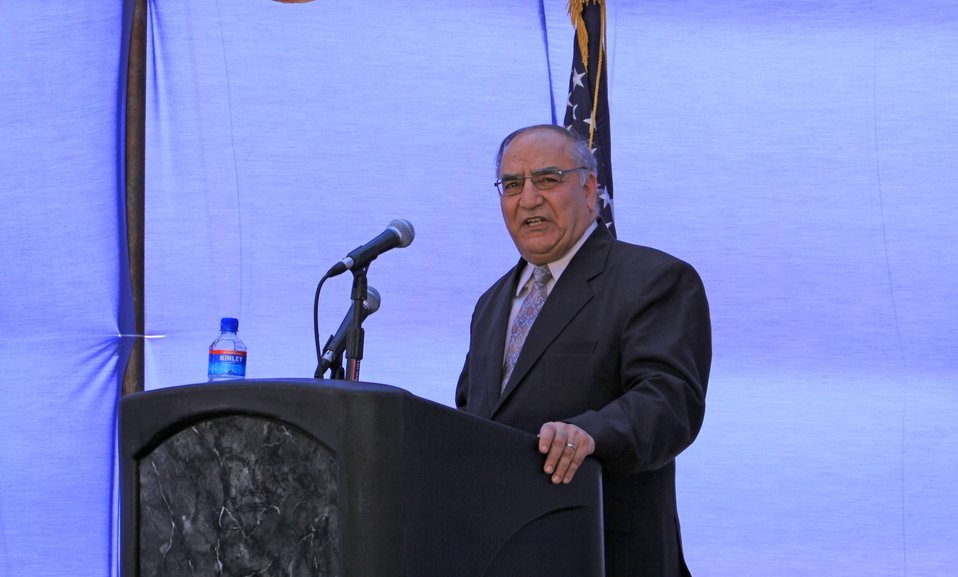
105 MW Tarakhil Power Plant Handover